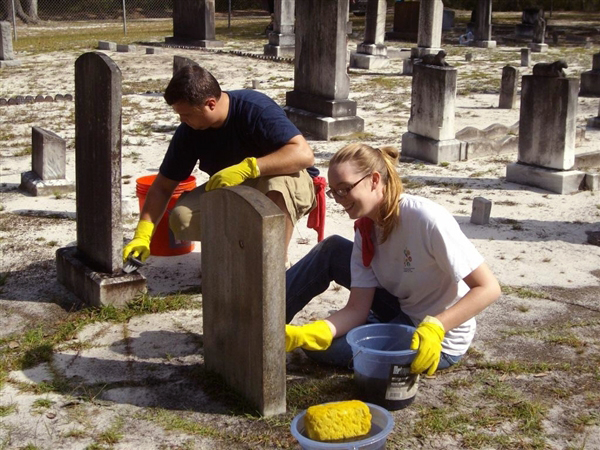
National Public Lands Day

Volunteers clean headstones in Bragg Cemetery on National Public Lands Day Sept. 25, 2009, at Fort Stewart, Ga.